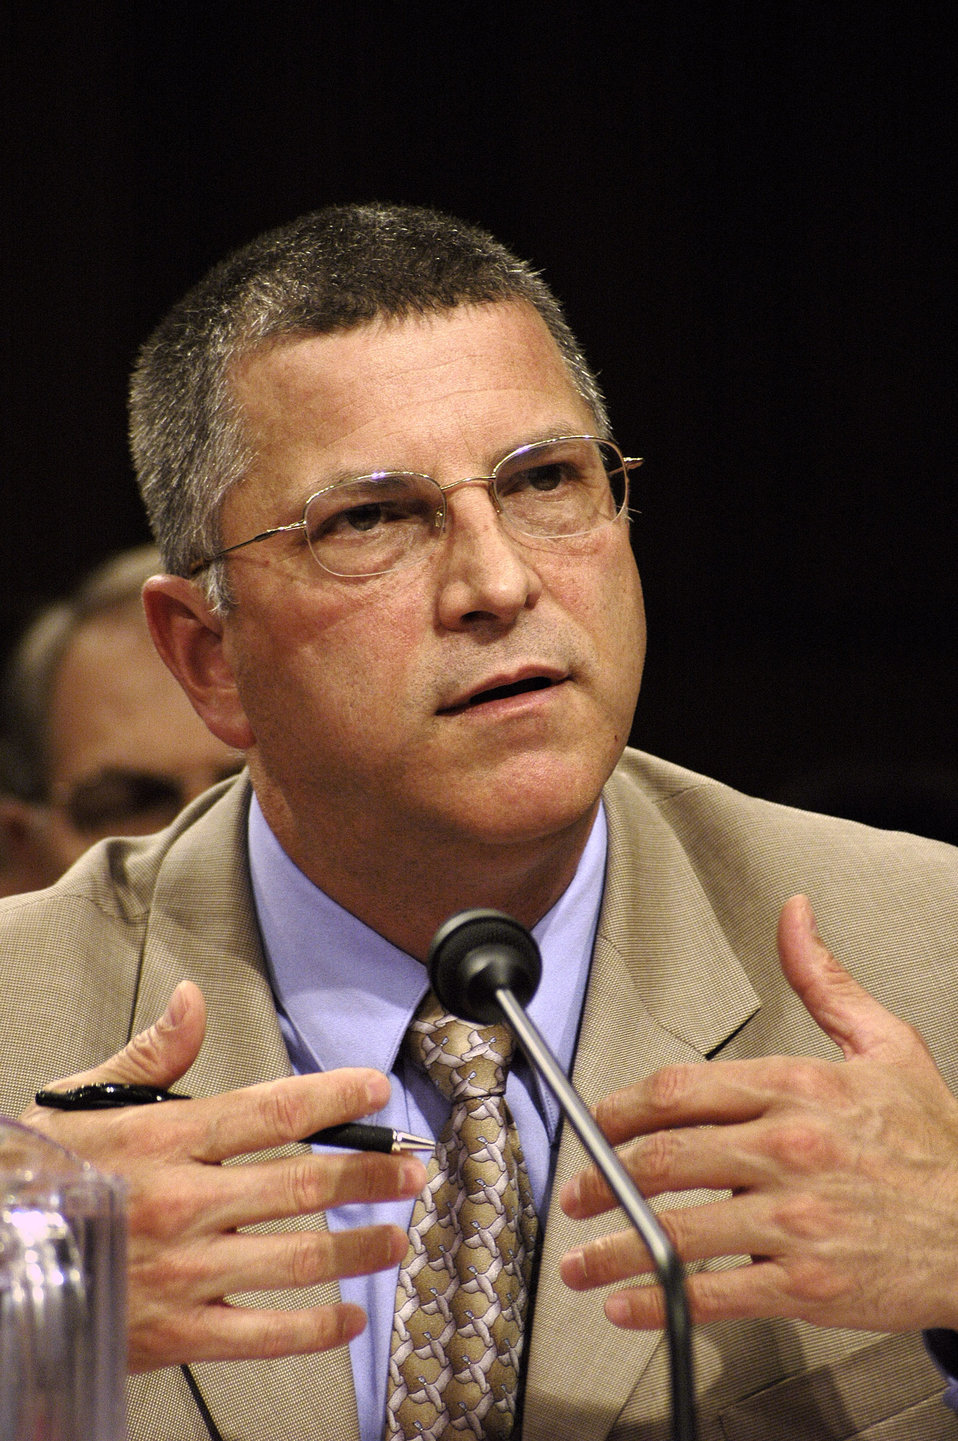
Total force shares capabilities

WASHINGTON -- Michael L. Dominguez testifies before the Base Realignment and Closure commission Aug. 11. Mr. Dominguez told BRAC commissioners the Air Force fleet will become smaller if the service's BRAC recommendations are approved. He also said new aircraft like the F/A-22 Raptor will compensate for the smaller fleet because the Raptor is far more capable than the aircraft it is designed to replace. Mr. Dominguez is the assistant secretary of the Air Force for Manpower and Reserve Affairs.